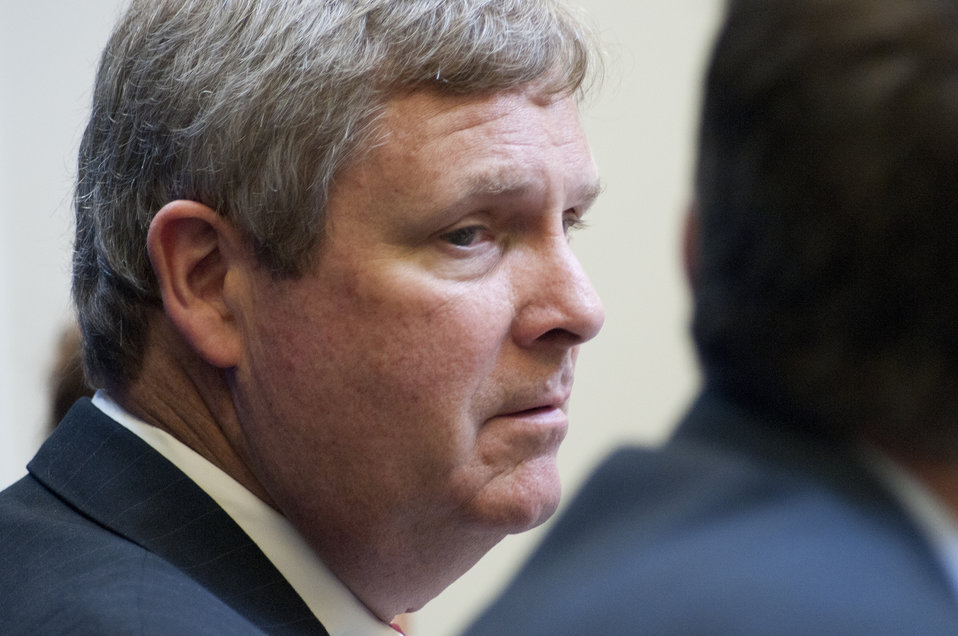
On Wednesday, Jul. 6, 2011, Agriculture Secretary Tom Vilsack attended a meeting at the White House in Washington, DC, with President Barack Obama, the President's Domestic Policy Adviser Melody Barnes and rural communities leaders from across the country for the White House Rural Champions of Change event. The purpose of this meeting is to strengthen rural communities and promote economic growth. Prior to coming here, they were posed with a question about, what should/should not the government be doing to strengthen rural communities and promote economic growth.